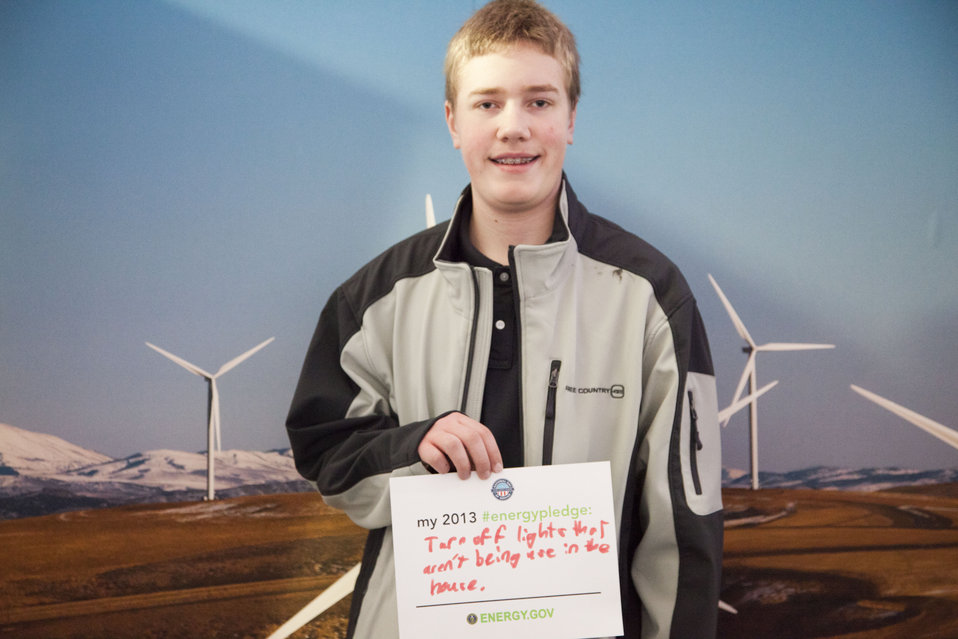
What's your #energypledge?